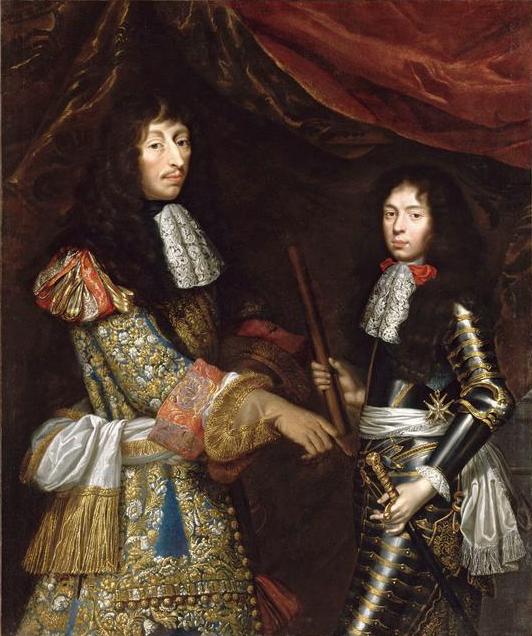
Louishenrijulesconde